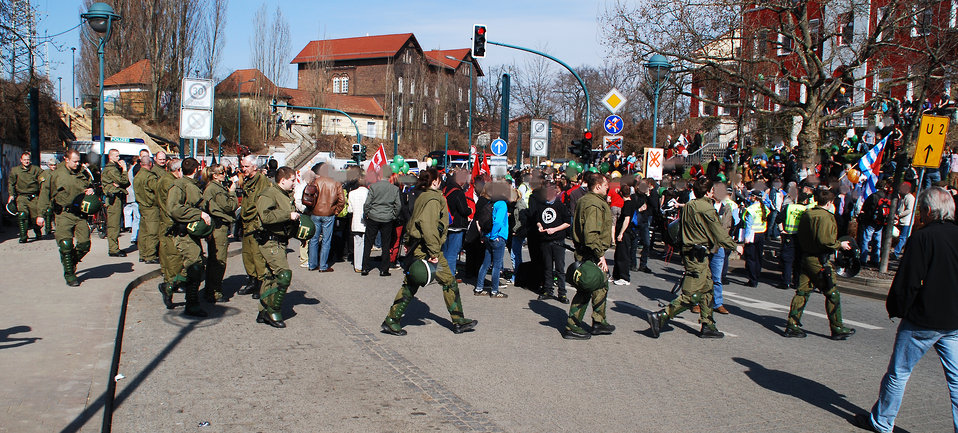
Proteste gegen den Nazi-Aufmarsch am 24.3.2012 in Frankfurt (Oder)